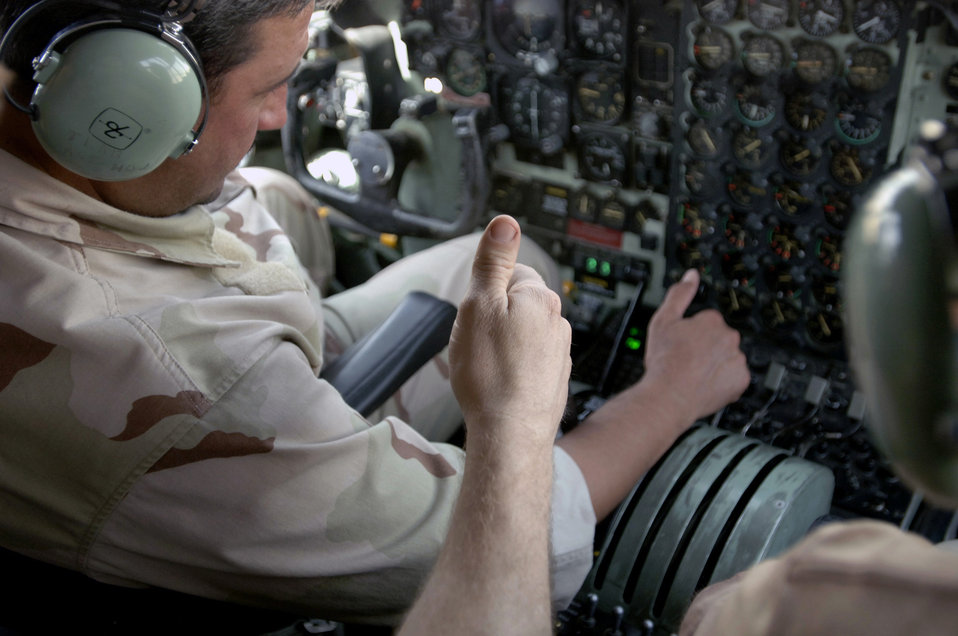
Airmen assist Iraqi Air Force reconstitution

Under the supervision of 370th Air Expeditionary Advisory Squadron Airmen, Iraqi Airmen run an engine check on an Iraqi Air Force C-130 Hercules at New Al Muthana Air Base, Baghdad, Iraq. The 370th AEAS provides guidance and mentoring in an effort to help restart the IAF.